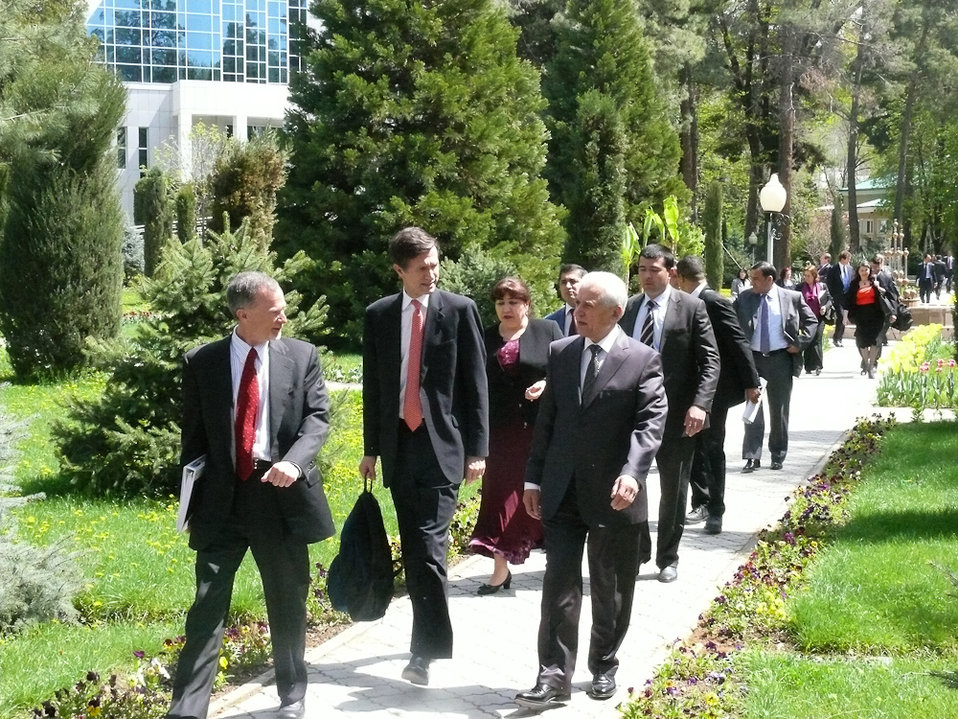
Assistant Secretary Blake Leads U.S. Government-Interagency Delegation to U.S.-Tajikistan Annual BIlateral Consultations

U.S. Assistant Secretary of State for South and Central Asian Affairs, Robert O. Blake, Jr. leads the U.S. government-interagency delegation to the second U.S. - Tajikistan Annual Bilateral Consultations in Dushanbe, Tajikistan, April 11 - 12, 2011. [Damian Wampler/ State Department photo/ Public Domain]